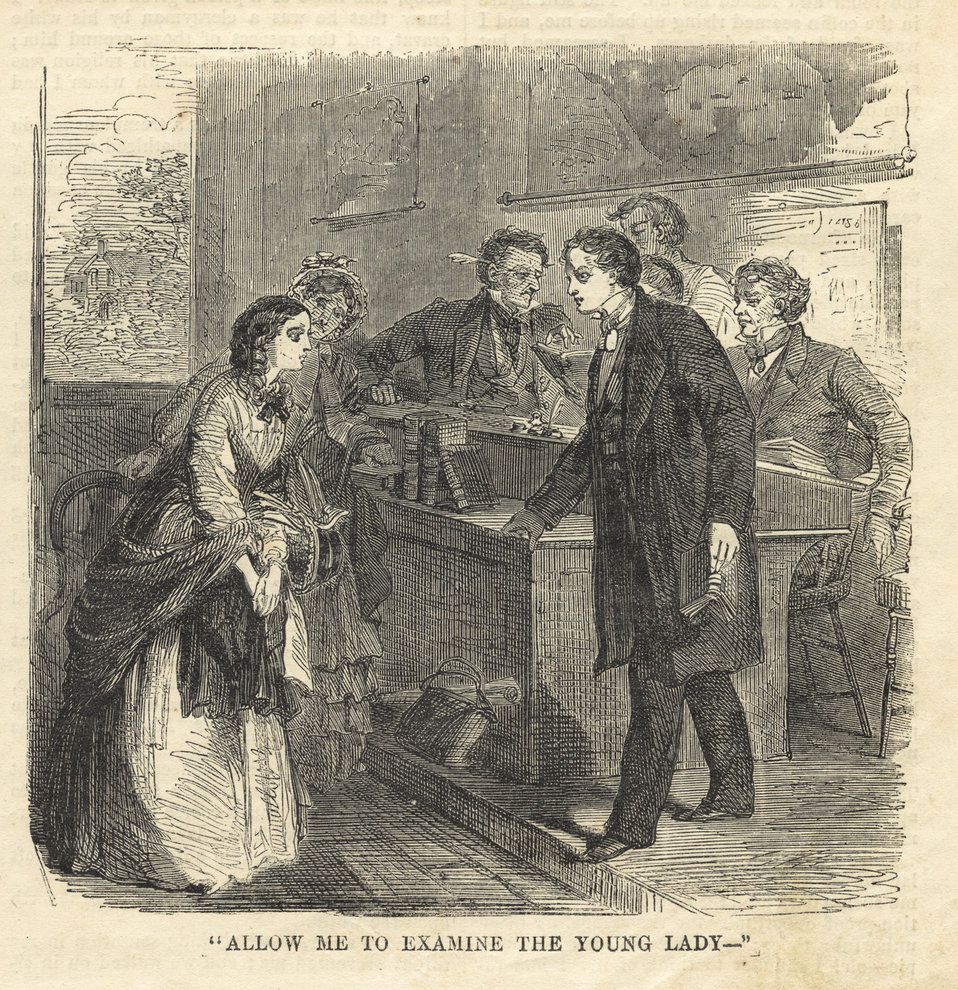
File name: 10 09 000172 Title: 'Allow me to examine the young lady--' Creator/Contributor: Homer, Winslow, 1836-1910 (artist) Date issued: 1860-02-18 Physical description: 1 print : wood engraving Genre: Wood engravings; Periodical illustrations Notes: Published in: Harper's Weekly, Volume IV, No. 164, 18 February 1860, p. 97. Collection: Winslow Homer Collection Location: Boston Public Library, Print Department Rights: No known restrictions
Flickr data on 2011-08-11: Camera: Epson Exp10000XL10000 Tags: Winslow Homer User: Boston Public Library BPL